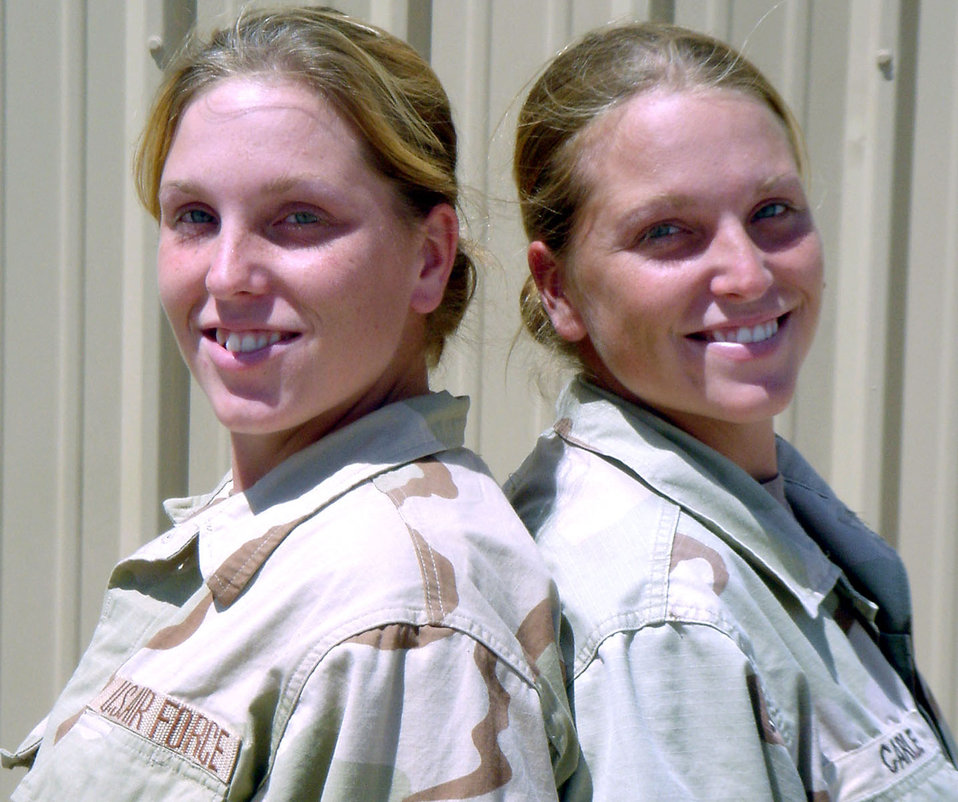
Twins stick together, even on deployment

BALAD AIR BASE, Iraq -- Staff Sgts. Sharon and Lerinda Carle joined the Air Force two weeks after graduating from high school in Silverton, Idaho. They are currently deployed together here.